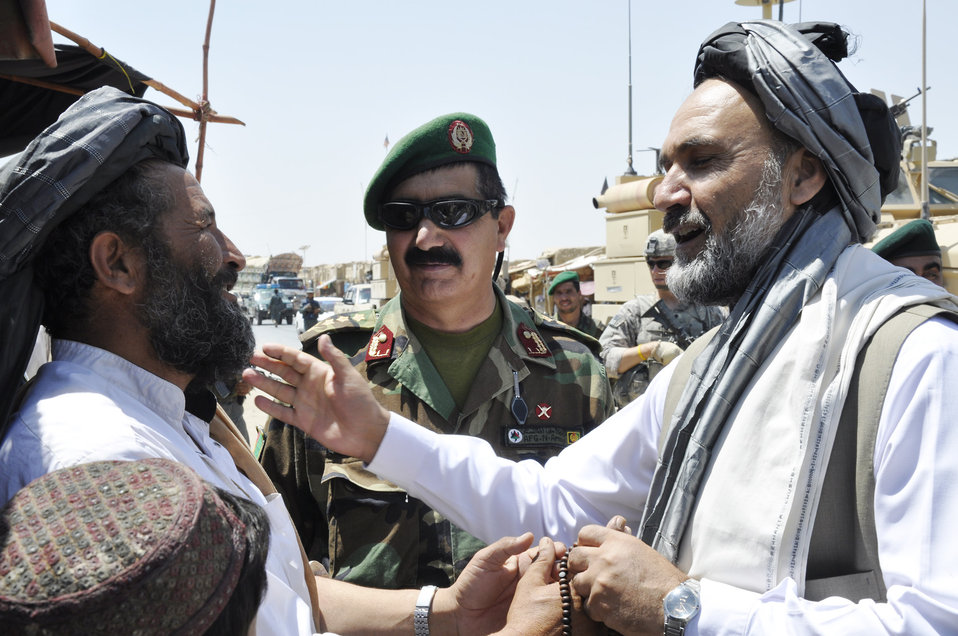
Servicemembers help reconnect Afghan, government

Gov. Mohammad Ashraf Naseri meets and greets locals during his Aug. 24, 2009, trip to Sha Joy district to discuss issues and concerns with village elders in the Zabul Province, Afghanistan. American servicemembers of the Provincial Reconstruction Team-Zabul provided transportation and security, and is a civil and military organization that brings reconstruction, development, governance and security to the province.